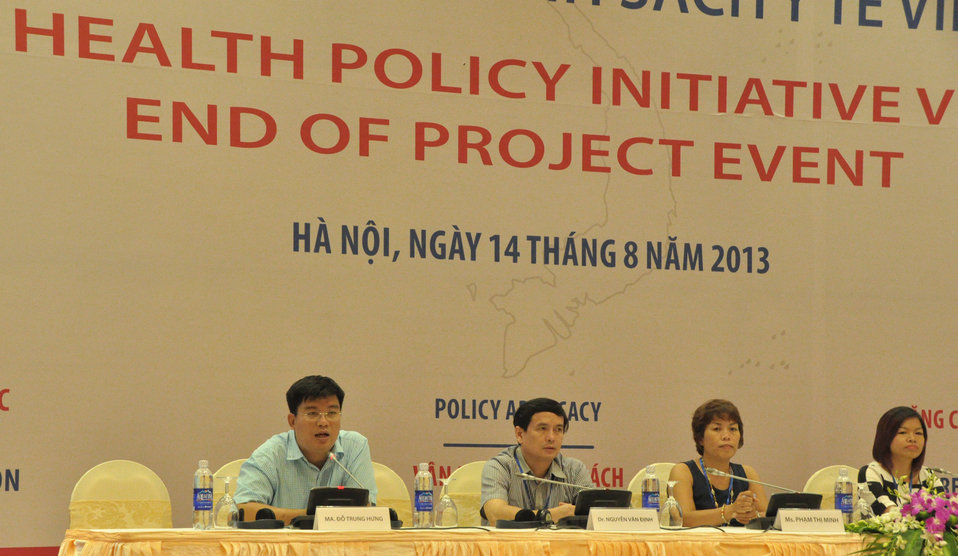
USAID Health Policy Initiative End of Project Workshop

Hanoi, August 14, 2013.